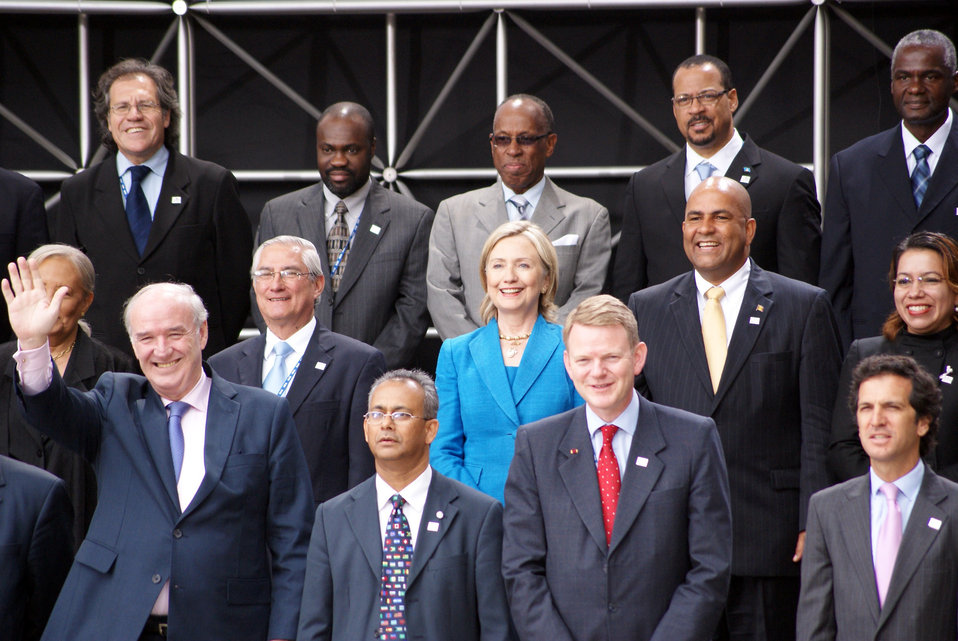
Secretary Clinton Attends 40th OAS Assembly Official Ministerial

U.S. Secretary of State Hillary Rodham Clinton poses with leaders during the 40th OAS Assembly Official Ministerial Photo in Lima, Peru June 7, 2010.